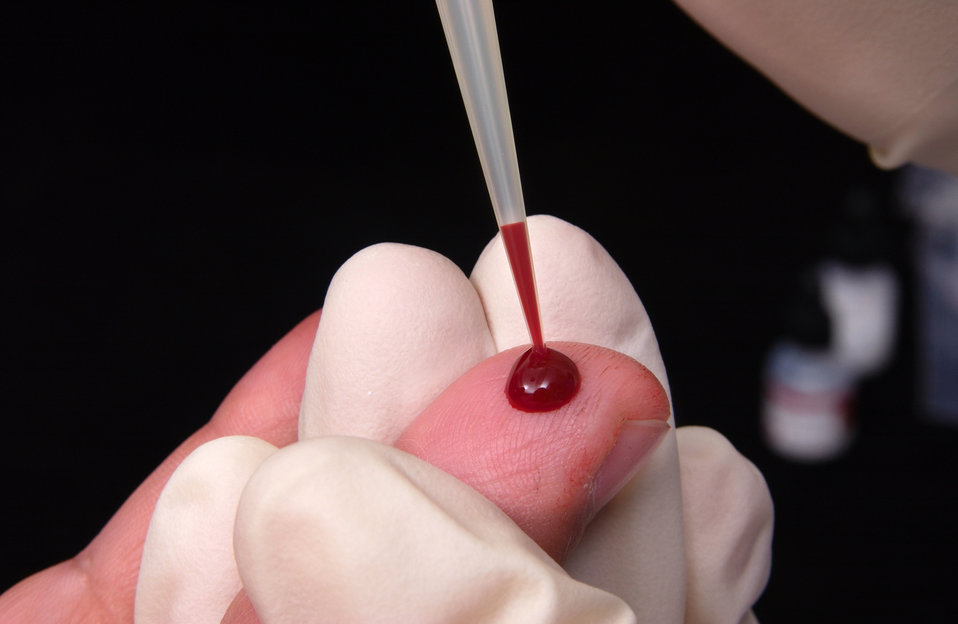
Perform a finger stick, and collect 10�l of specimen using a calibrated pipette with its disposable pipette tip. (Step 7 of 12)